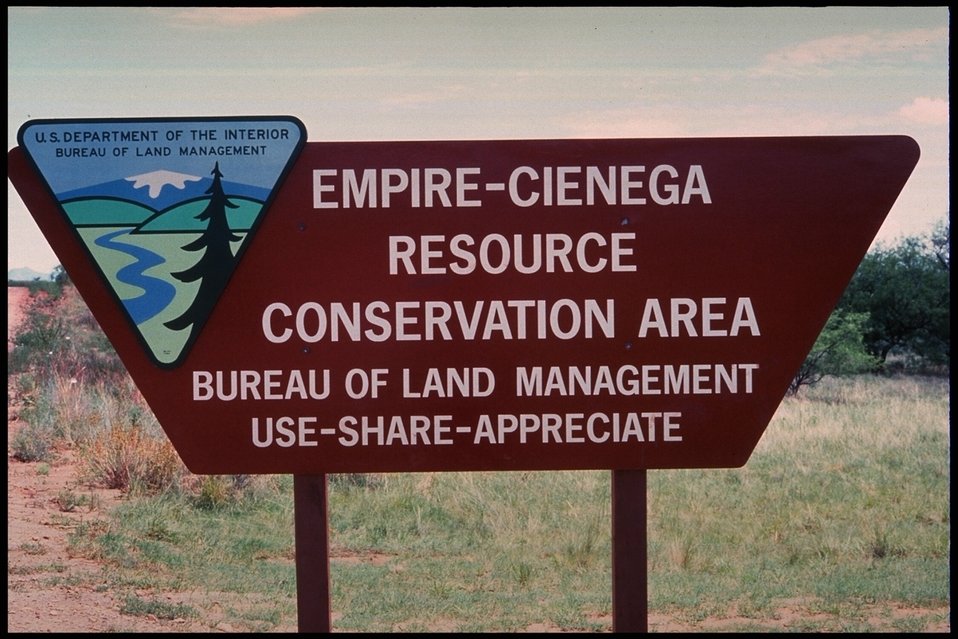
A sign at the entrance to the Empire-Cienega Resource Conservation Area.